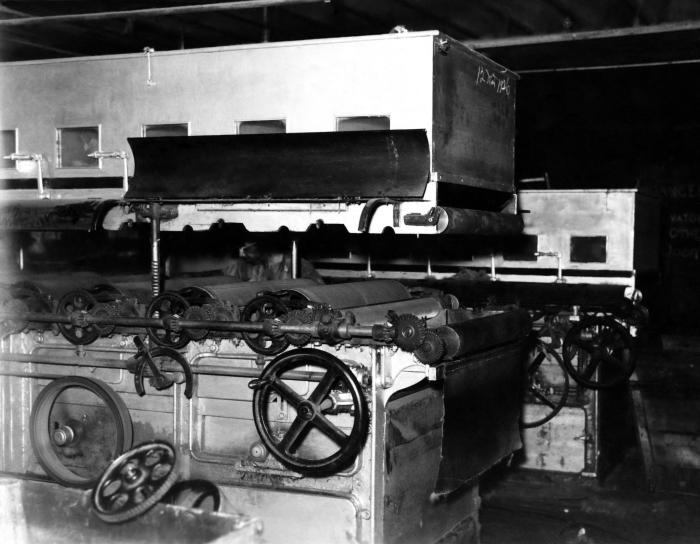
Provided by the Center for Disease Control's (CDC), National Institute for Occupational Safety and Health (NIOSH), this historic image, shot inside a Connecticut hat manufacturing plant, depicted some of the machinery used in the manufacture of natural animal fur hats. Working with newly processed fur, which had been 'carroted', or fixed with mercury nitrate, workers could be exposed to airborne mercury, thereby, suffering the detrimental neurologic consequences from its inhalation. Using steam, which was integral to the hatters' industry, the airborne dissemination of this neurotoxic element was facilitated. Mercury exposure leads to heavy metal poisoning, with severe pathologic neurological consequences.